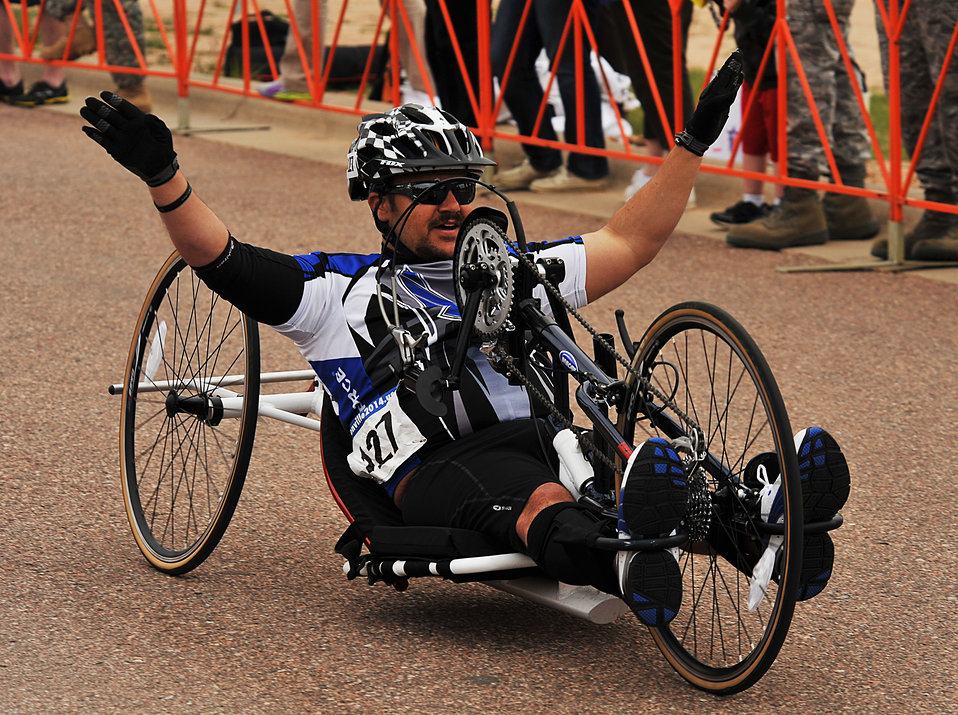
Warrior Games

Retired U.S. Air Force Tech. Sgt. Chris Wolff raises his hands after crossing the finish line as he takes part in a hand cycling event during Warrior Games 2012 at the U.S. Air Force Academy in Colorado Springs, Colo., May 1, 2012.